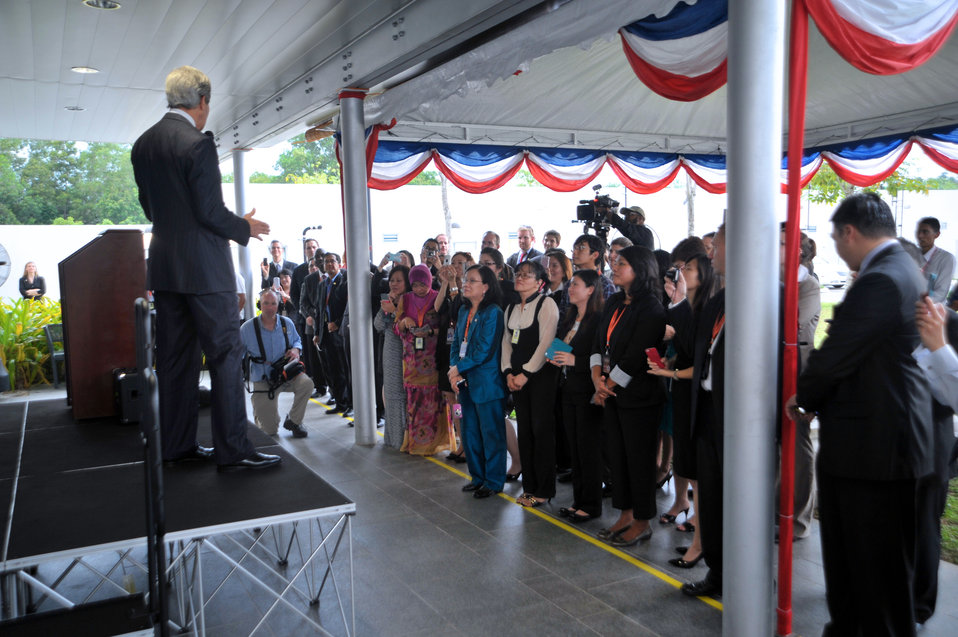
Secretary Kerry Addresses Embassy Bandar Seri Begawan Staff

U.S. Secretary of State John Kerry addresses government and local staffers at the U.S. Embassy in Bandar Seri Begawan, Brunei, on July 2, 2013.